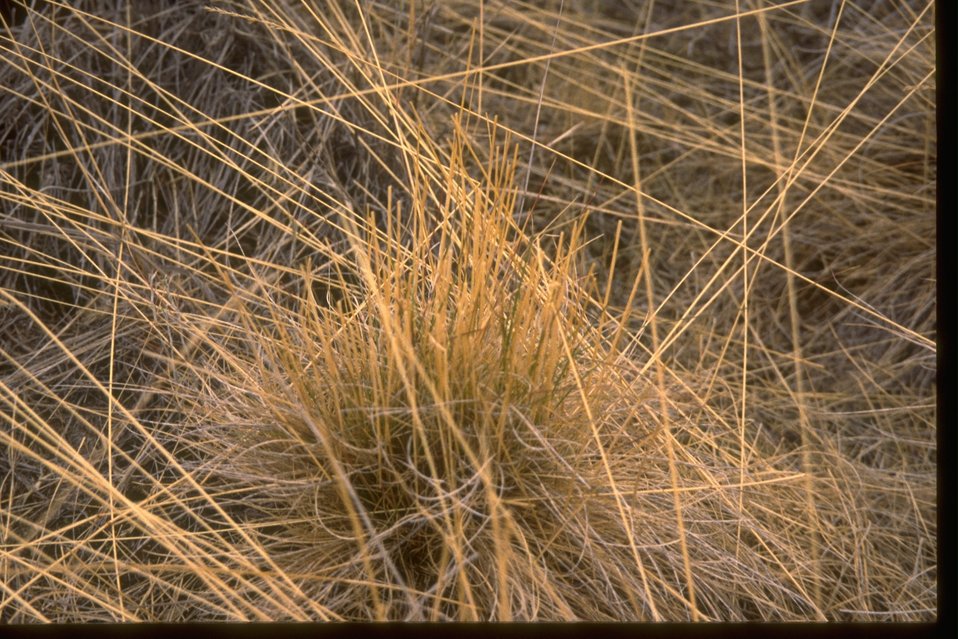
Close up of Idaho Fescue with little in central Oregon.